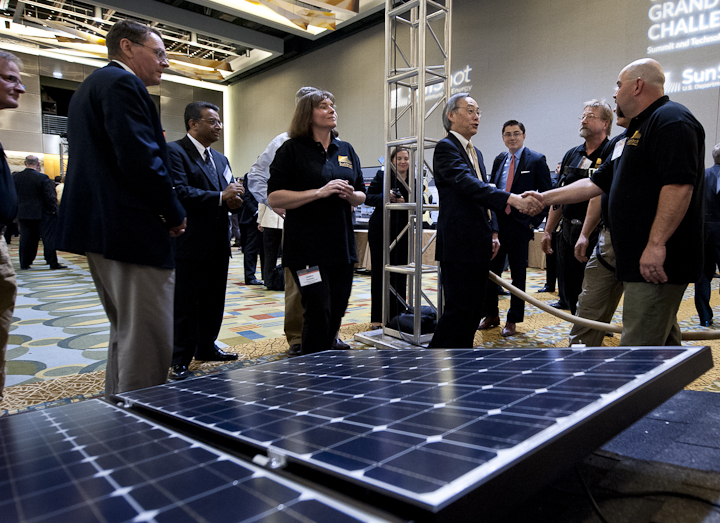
SunShot Tour

June 13, 2012- Steven Chu, Secretary of Energy, U.S. Department of Energy meets with students from Front Range Community College at an instruction exhibit at the Technology Forum at the SunShot Grand Challenge Summit and Technology Forum in Denver, Colorado.